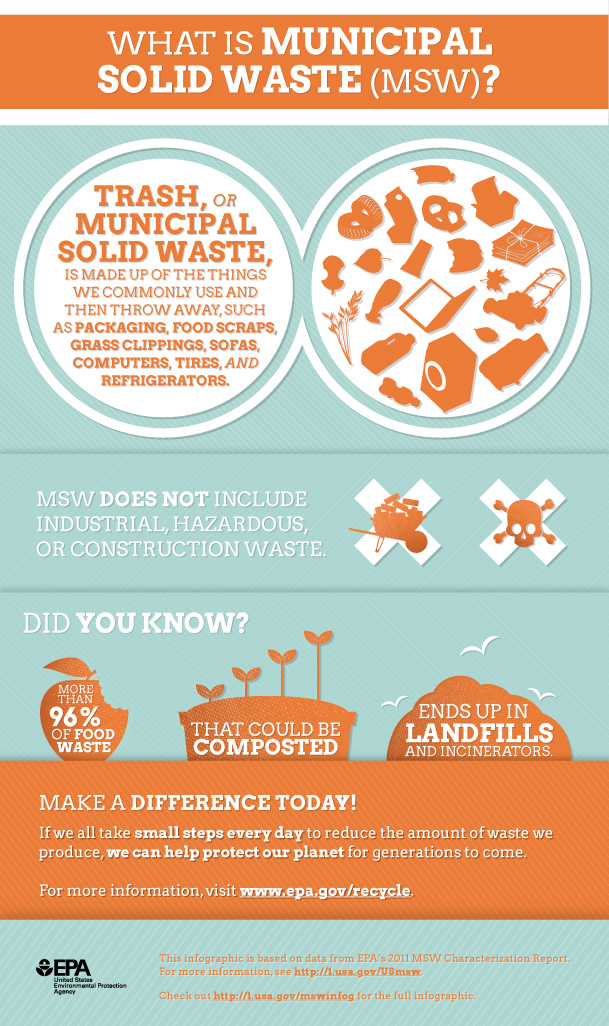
What is Municipal Solid Waste (MSW)?

Municipal Solid Waste (MSW)—more commonly known as trash or garbage—consists of everyday items we use and then throw away. This comes from our homes, schools, hospitals, and businesses.

Data based on the full 2011 Municipal Solid Waste Characterization Report: go.usa.gov/bPxY